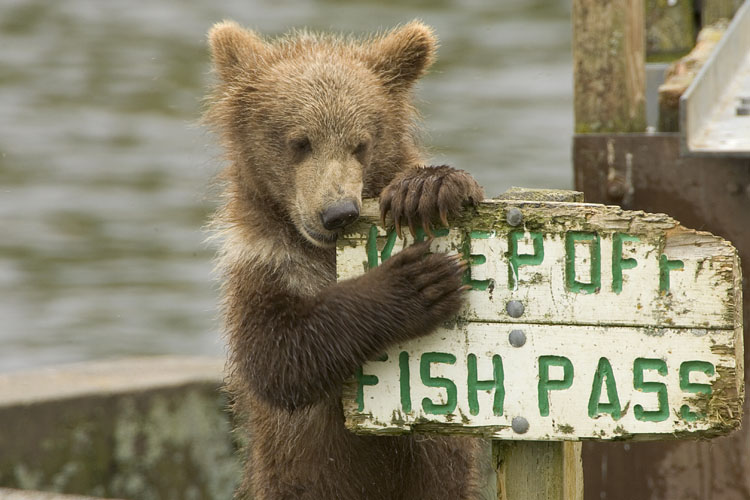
Wildlife of Kodiak Refuge